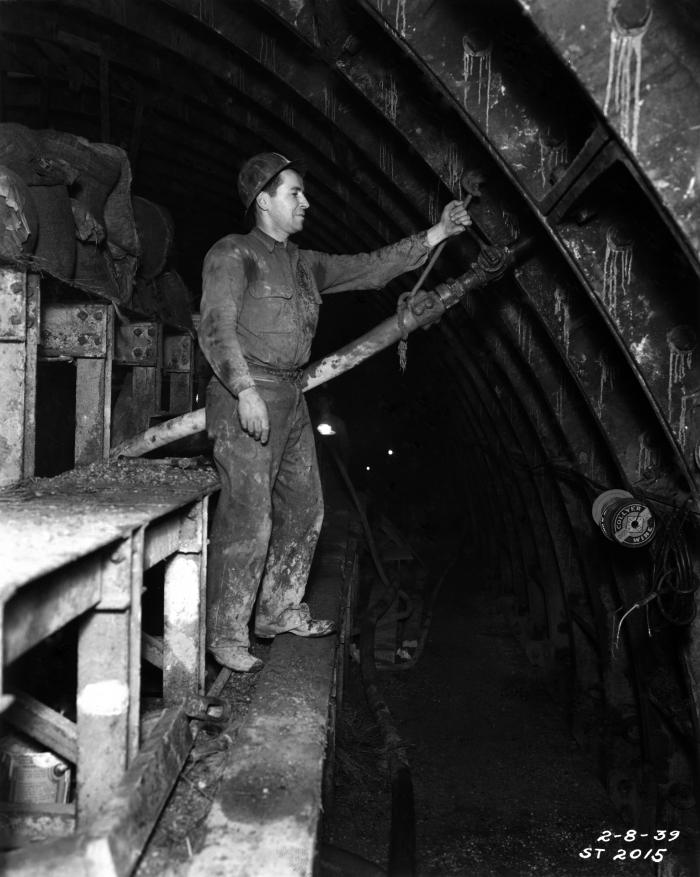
This historical image was provided by the Center for Disease Control's (CDC), National Institute for Occupational Safety and Health (NIOSH). The photograph depicted a tunnel worker inside the Queens Midtown Tunnel, in Queens, New York, while the subterranean passageway was under construction. Note that the man was wearing a protective hardhat, but wore no gloves, or filtered breathing mask, though it cannot be determined from this image if these were necessary.